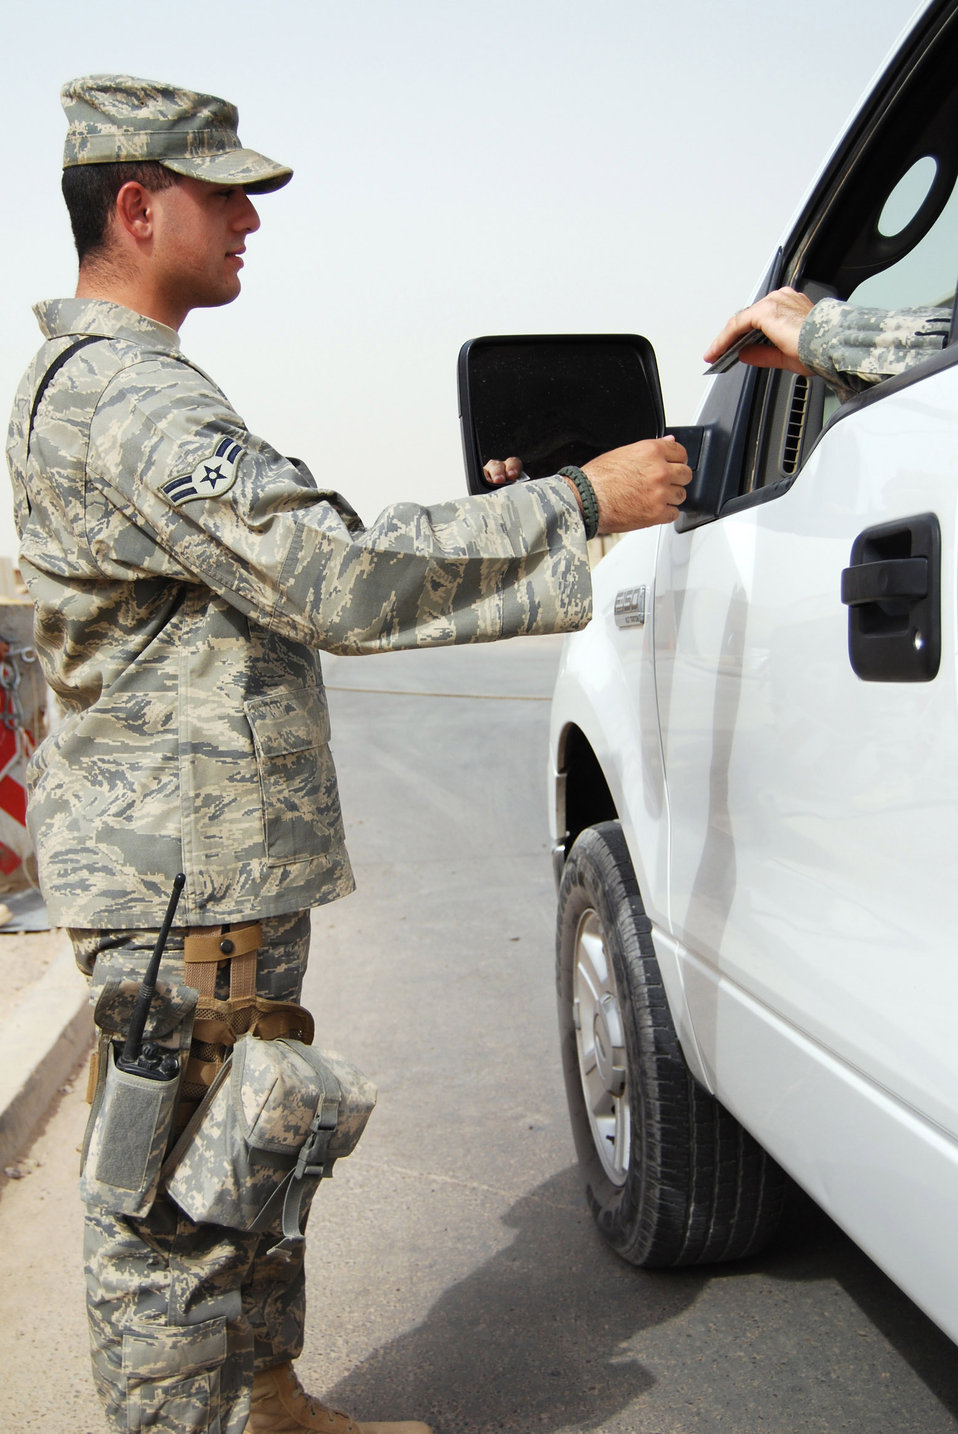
Baghdad native returns to Iraq as American Airman

Airman 1st Class Murad Mohiadeen verifies the identification of a Soldier driving through an entry control point at the Air Force Theater Hospital Aug. 2 at Joint Base Balad, Iraq. Airman Mohiadeen, a native of Baghdad, was raised in the United States when his family emigrated from Iraq in 1990. Airman Mohiadeen is a security forces apprentice with the 332nd Expeditionary Security Forces Squadron here and is deployed from Royal Air Force Lakenheath, England.